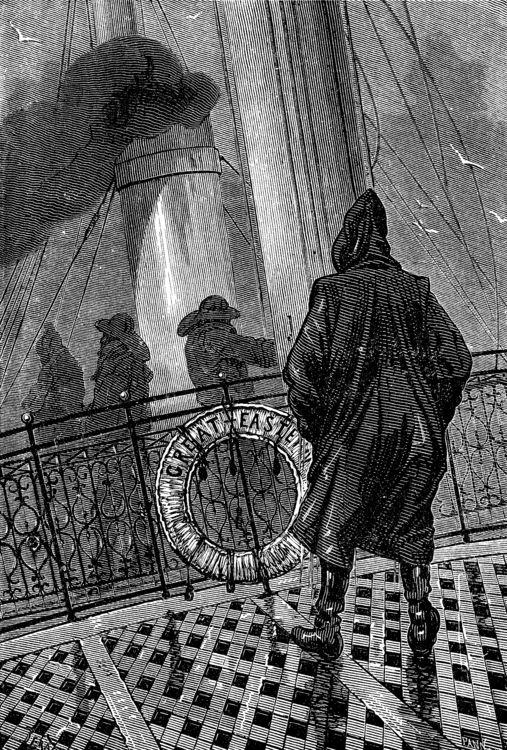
An illustration from Jules Verne's novel 'A Floating City' (1869) drawn by Jules Férat. Polski: Ilustracja powieści Juliusza Verne'a 'Pływające miasto' (1869) autorstwa Julesa Férata. Français : Jules Verne: 'Une Ville flottante' (1869), dessins par Jules Férat. Orginal text: Français : Le dos rond, la tête encapuchonnée.